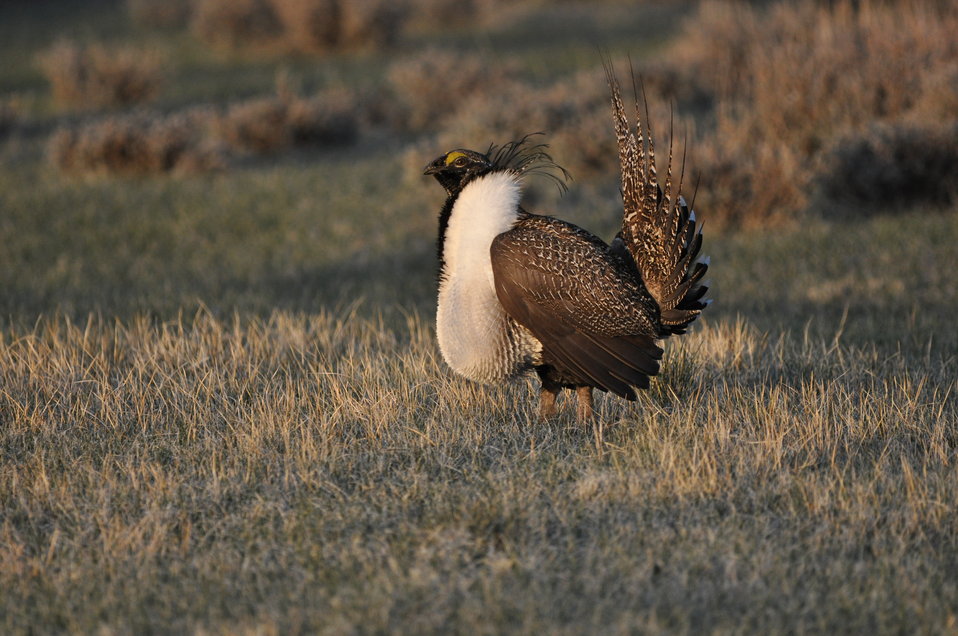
Greater Sage-Grouse

Photo Credit: Jeannie Stafford/USFWS
A greater sage-grouse male struts at a lek (dancing or mating ground) near Bridgeport, CA to attract a mate.